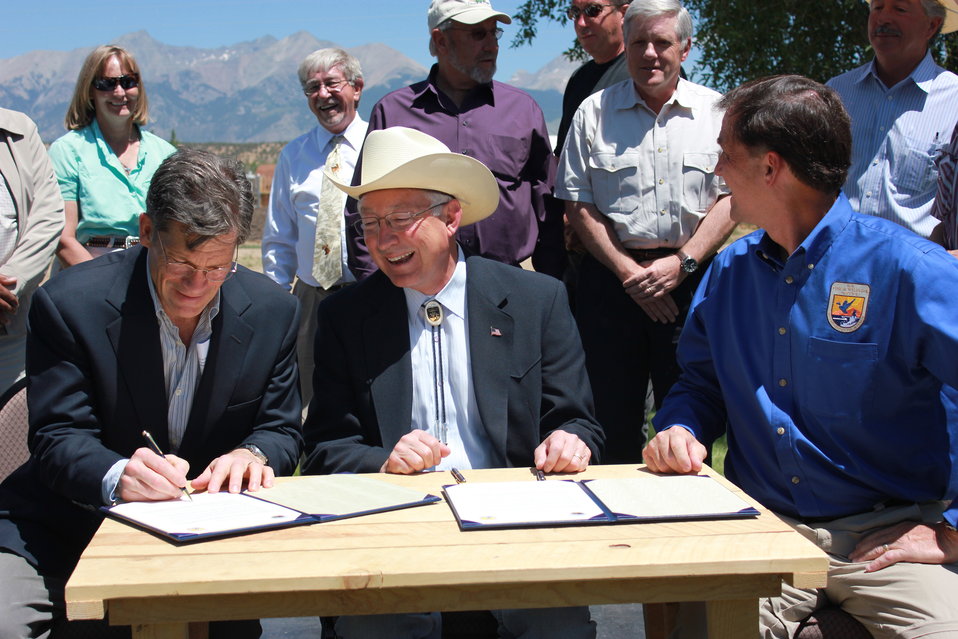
Historic Conservation Easement in Sangre de Cristo Mountains